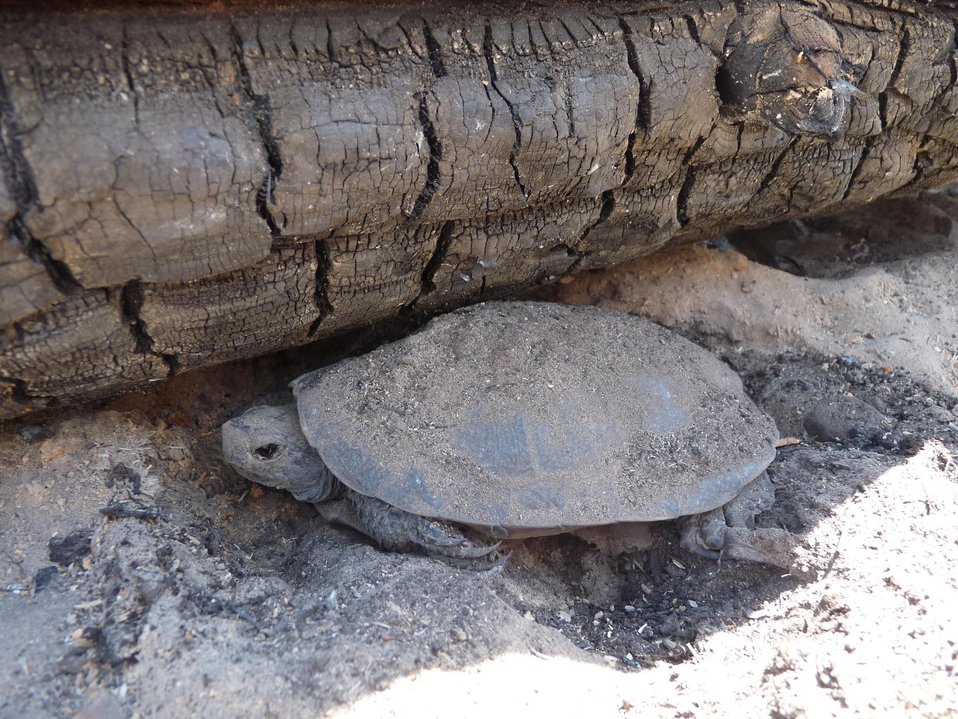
A Western Pond Turtle covered in ash rests near burned log on ridge just west of Lake Eleanor after the Rim Fire. BAER is a rapid assessment of burned watersheds by a BAER team to identify imminent post-wildfire threats to human life and safety property and critical natural or cultural resources on National Forest System lands and take immediate actions to implement emergency stabilization measures before the first major storms. Fires result in loss of vegetation exposure of soil to erosion and increased water runoff that may lead to flooding increased sediment debris flows and damage to critical natural and cultural resources. BAER team members implement seeding and mulching installation to prevent erosion, erect temporary water run-off control structures that will protect recovering areas, and installation of warning signs, replace safety related facilities, remove safety hazards, prevent permanent loss of habitat for threatened and endangered species, and prevent the spread of noxious weeds and protect critical cultural resources. The Rim Fire in the Stanislaus National Forest near in California began on Aug. 17, 2013 and is under investigation. The fire has consumed approximately 256,169 acres and is 84% contained.